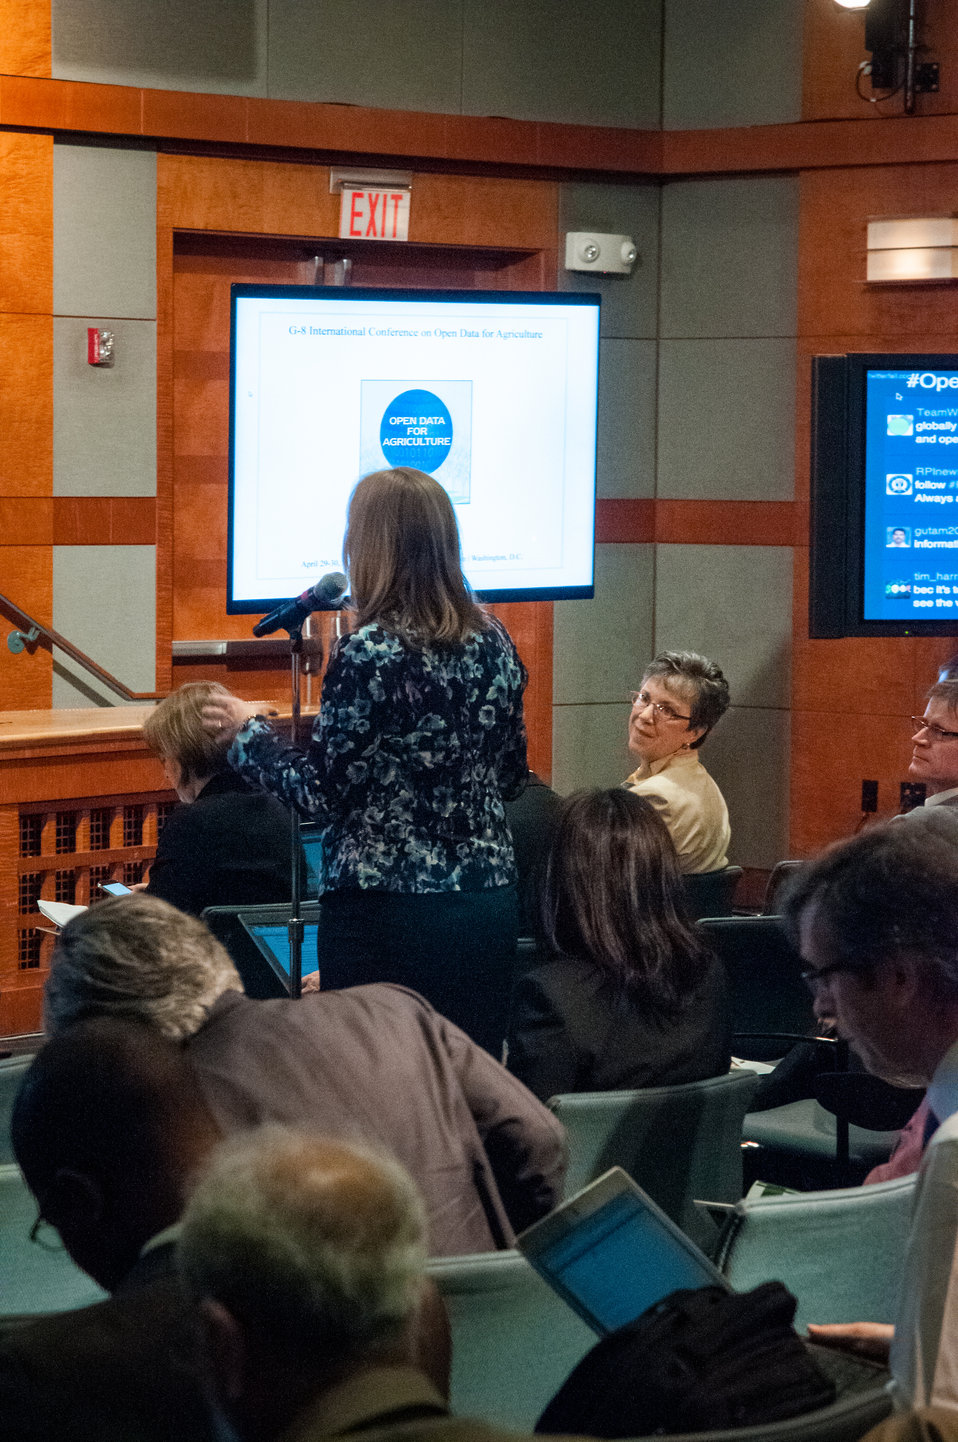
Agriculture Under Secretary Research, Education and Economics (REE) Host and Mistress of Ceremonies Dr. Catherine Woteki listens to a question posed by a member of the audience during the second day of the two day G-8 International Conference on Open Data for Agriculture in Washington, D.C., Tuesday on Apr. 30, 2013. The conference launched a new 'virtual community' of Food, Agriculture, and Rural data on Data.gov-the U.S. Government's data sharing website-to catalogue America's publicly available agricultural data and increase the ability of the public to find, download, and use datasets that are generated and held by the Federal Government. The data community features a collection of more than 300 newly cataloged datasets, databases, and raw data sources related to food, agriculture, and rural issues from agencies across the U.S. Government. In addition to the data catalog, the virtual community shares a number of applications, maps and tools designed to help farmers, scientists and policymakers improve global food security and nutrition.